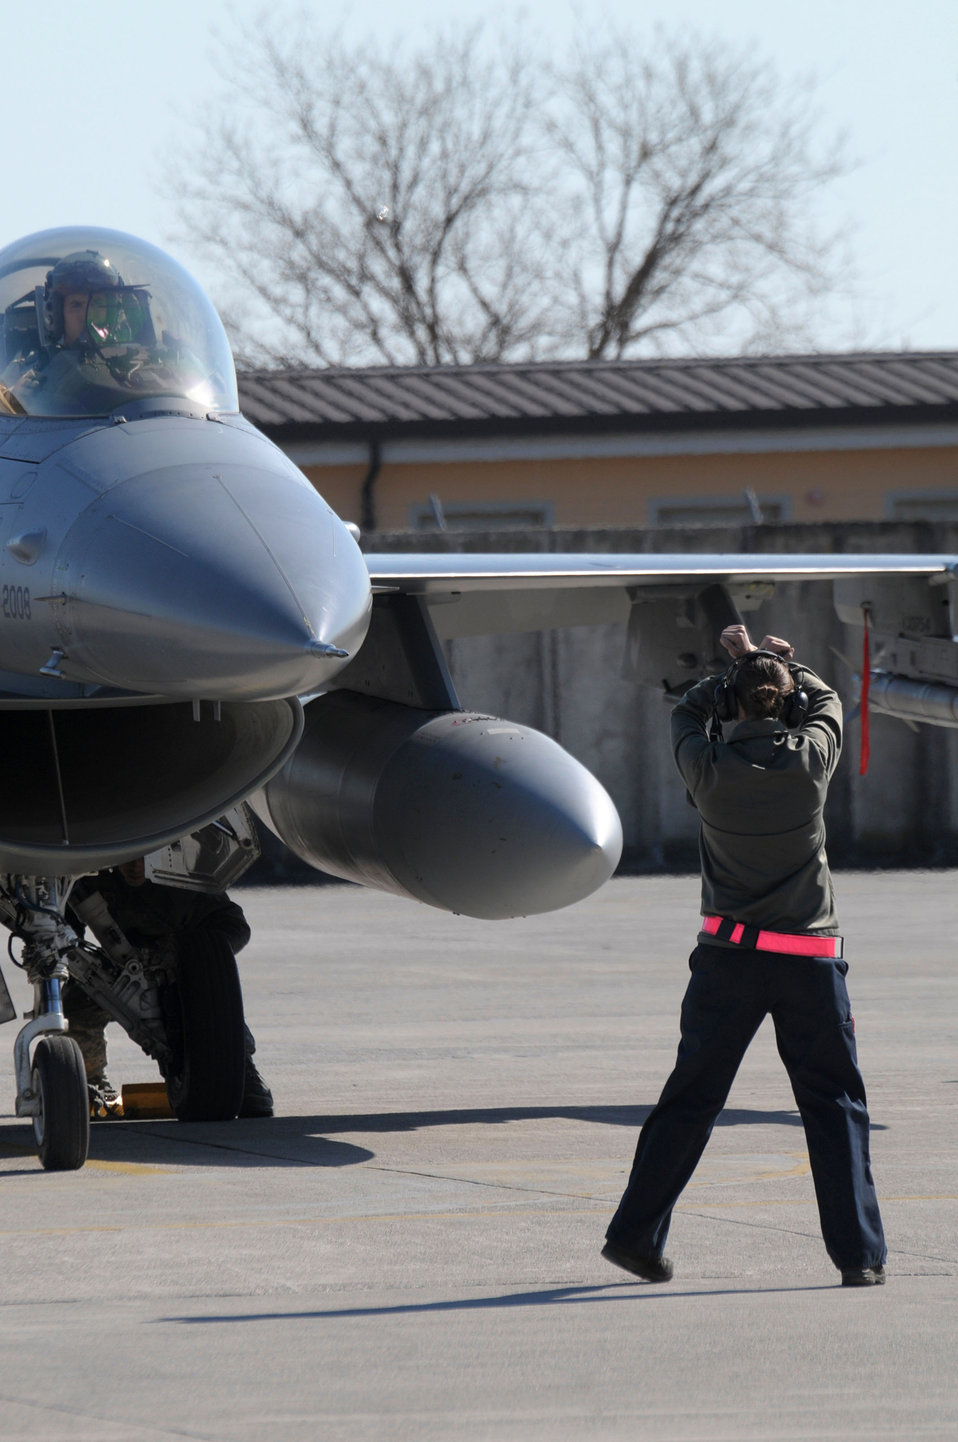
Odyssey Dawn

A U.S. Air Force flight crew member guides an F-16 Fighting Falcon pilot at Aviano Air Force Base, Italy, after supporting Operation Odyssey Dawn on March 20, 2011. Joint Task Force Odyssey Dawn is the U.S. Africa Command task force established to support the larger international response to the unrest in Libya. A broad coalition of nations are partnering to enforce U.N. Security Council Resolution (UNSCR) 1973, which authorizes all necessary means to protect civilians in Libya under threat of attack by Qadhafi regime forces. JTF Odyssey Dawn is commanded by Admiral Samuel J. Locklear, III.